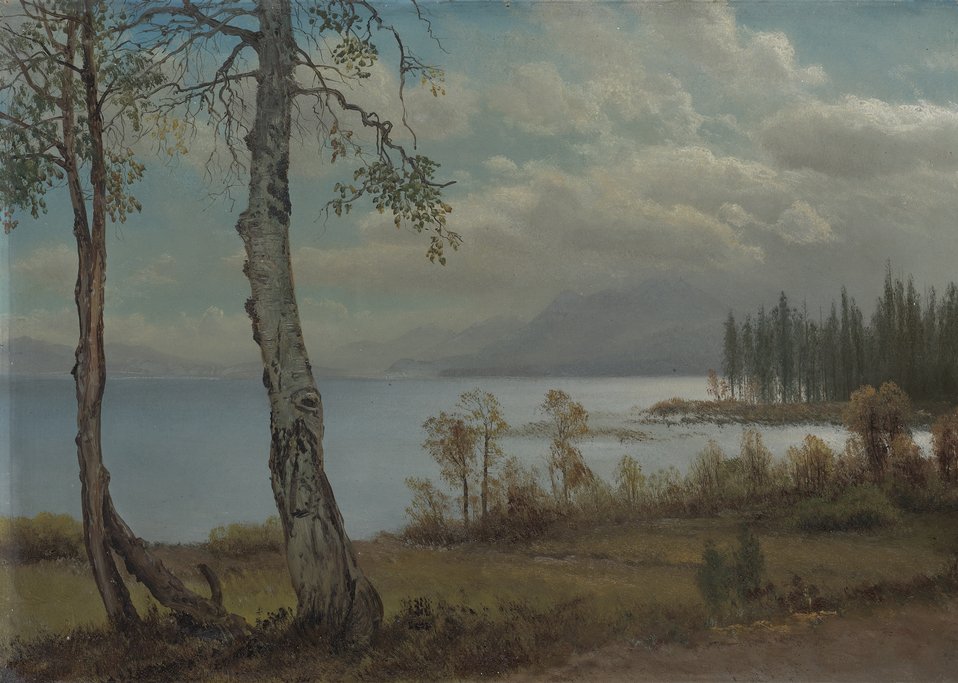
Albert Bierstadt - ‚Lake Tahoe‘